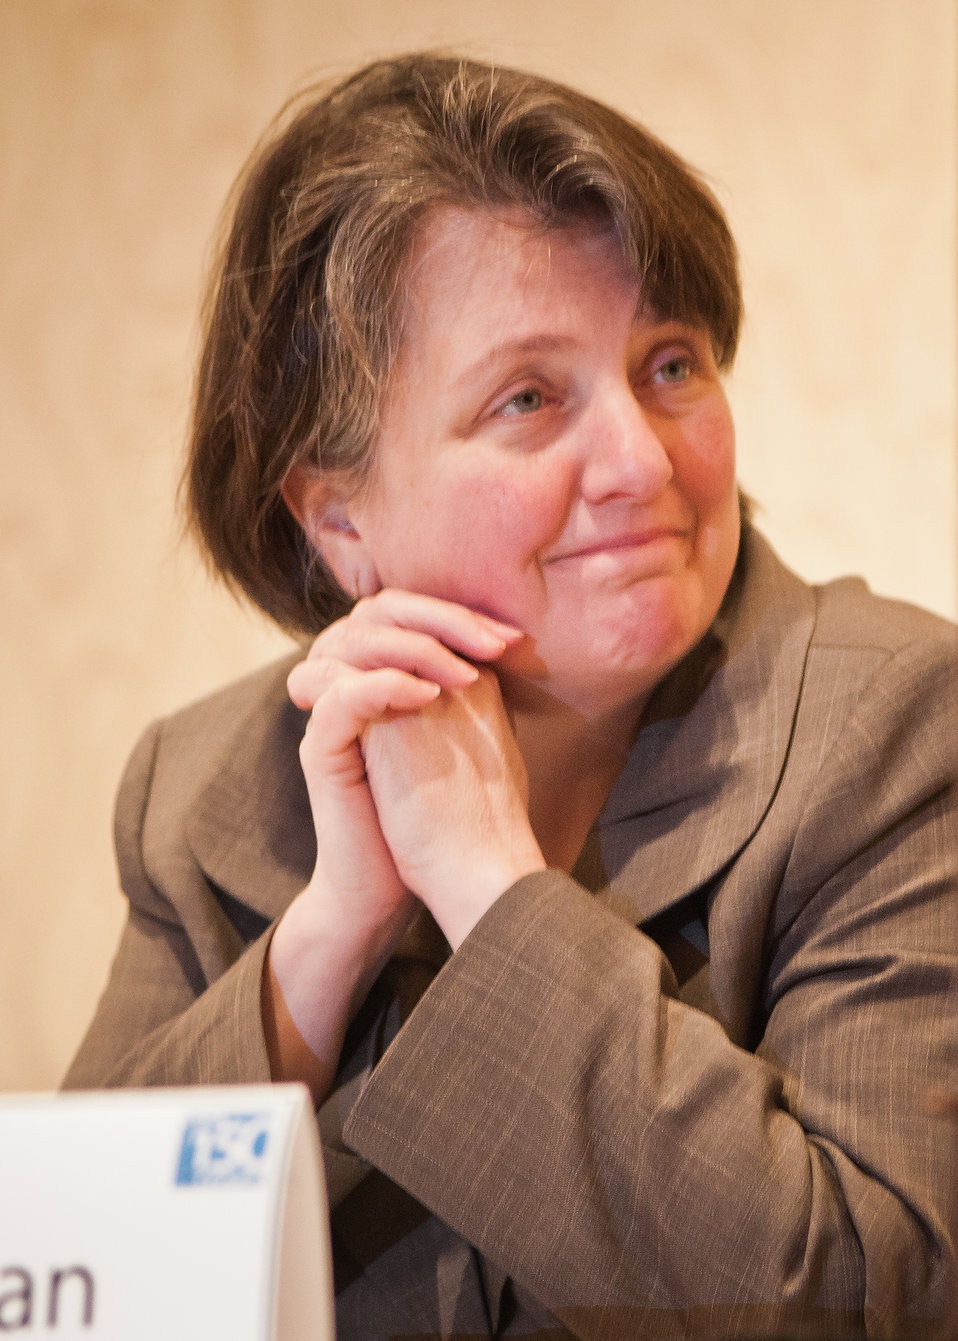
Dr. Kathleen Merrigan, Deputy Secretary, United States Department of Agriculture moderated the Making Locally Grown Food More Available afternoon breakout session at the 2012 Agricultural Outlook Forum, “Moving Agriculture Forward, Growing, Innovating and Celebrating 150 Years” held at the Crystal gateway Marriott Hotel Arlington, Virginia, Friday, February 24, 2012. The session explored what is driving demand for local foods, the challenges local food producers face trying to market their products and what is being done to facilitate local food marketing.